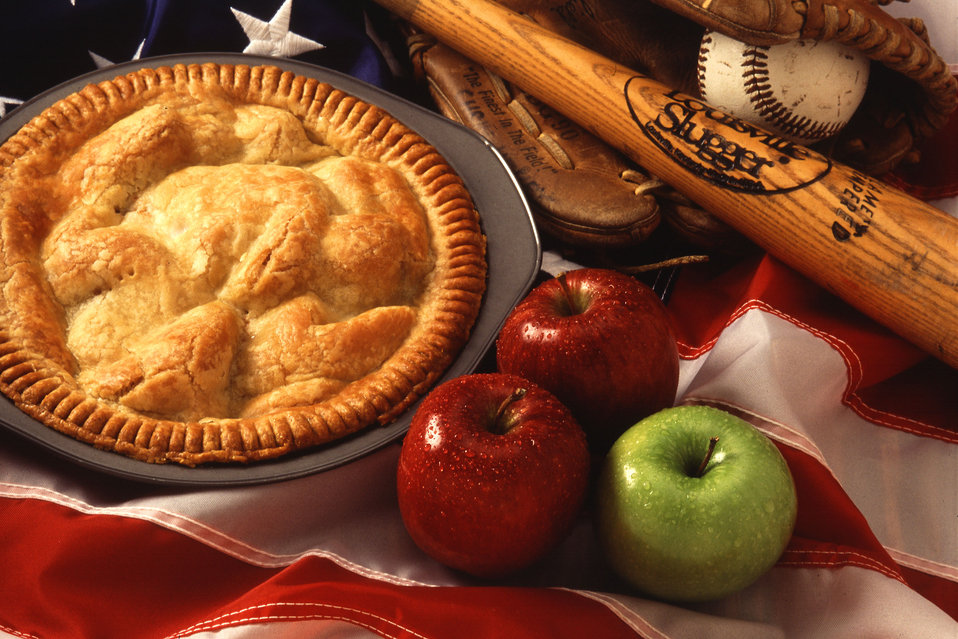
Apples are an all-American success story and Americans eat more than 19 pounds of them annually. Thanks to the U.S. Department of Agriculture’s (USDA) Agricultural Research Service (ARS) fruit-breeding research, the U.S. enjoys more productive, healthy, and flavorful new varieties every year. USDA ARS has even worked on bashless bagging-packaging systems that are used by wholesalers to bring you apples without bruises.